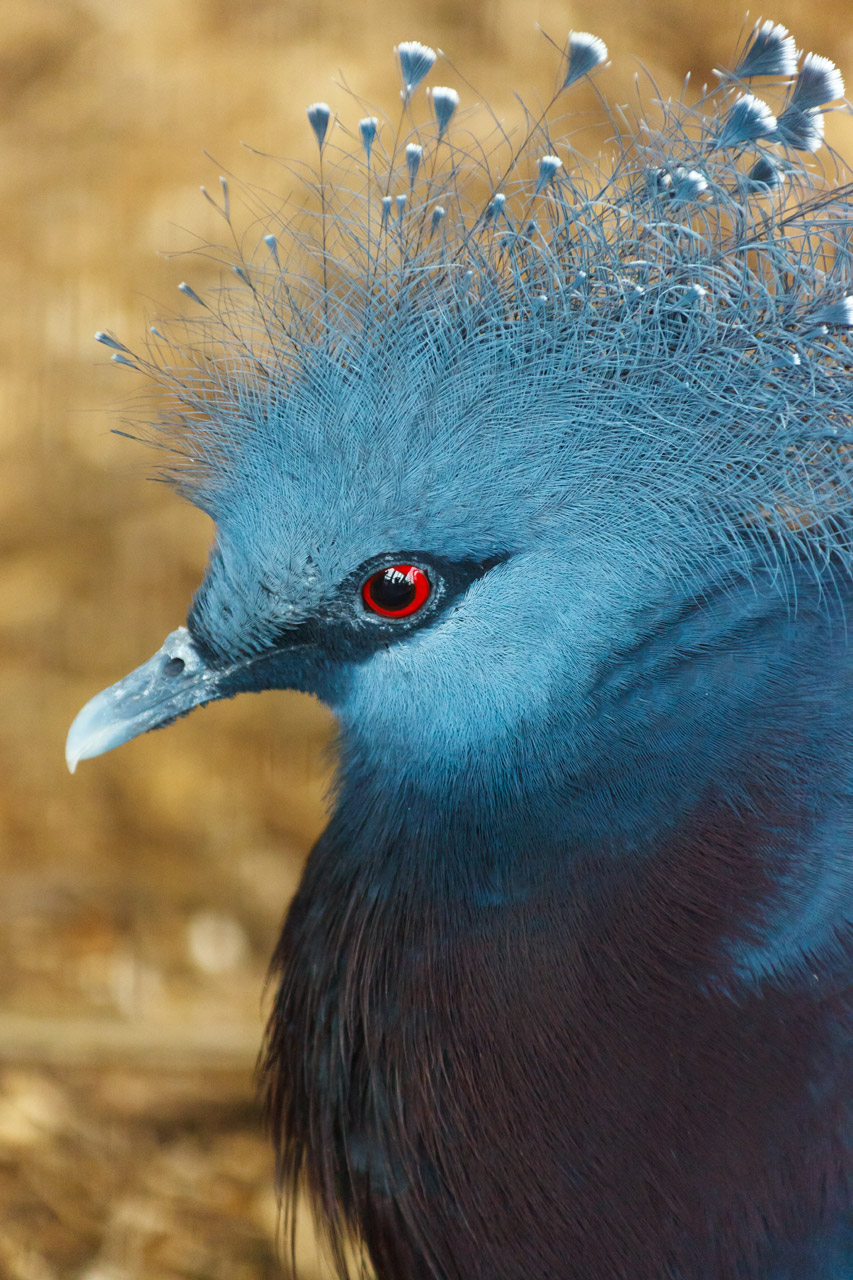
Victoria crowned pigeon portrait.